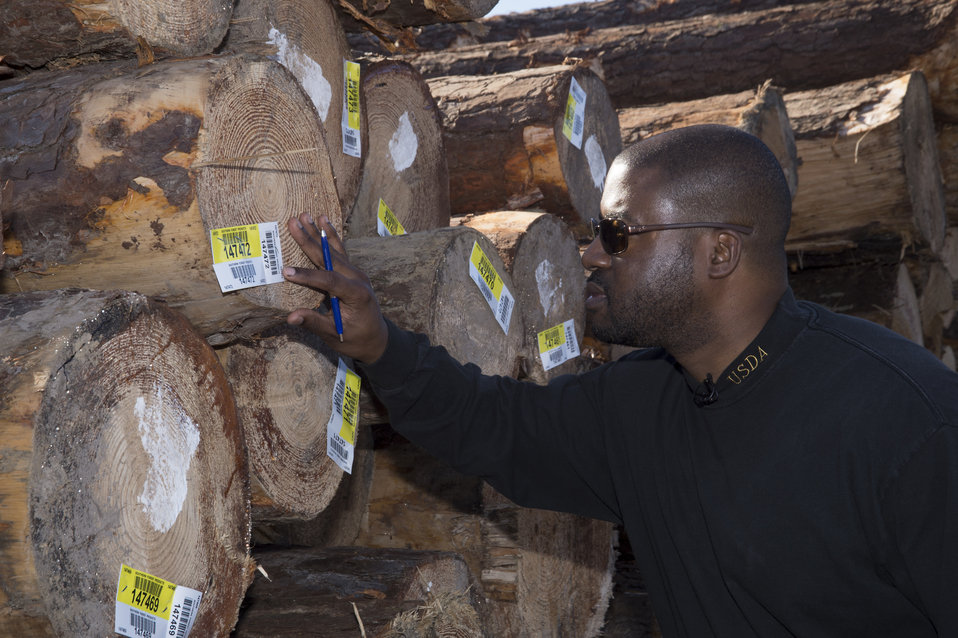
U.S. Department of Agriculture’s (USDA) Animal and Plant Health Inspection Service (APHIS) employee inspects fumigated logs near the Port of New Orleans in New Orleans, LA on Wednesday, Nov. 20, 2013. The fumigation process prevents the spread of any bacteria or insect that might cause harm to a foreign country’s agriculture.